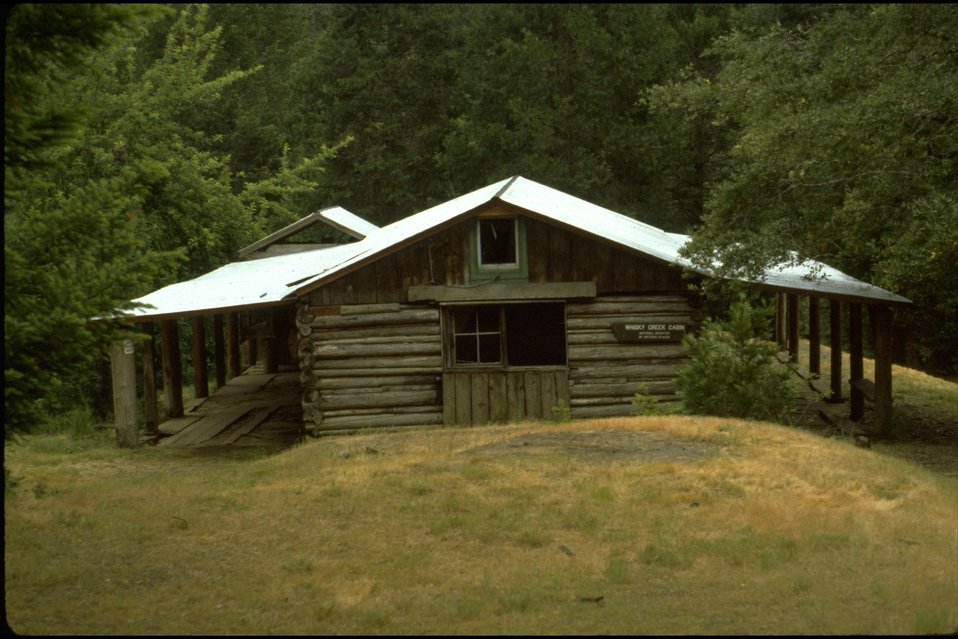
Rogue River - Whisky Creek Cabin, full view of north (uphill) side of cabin.